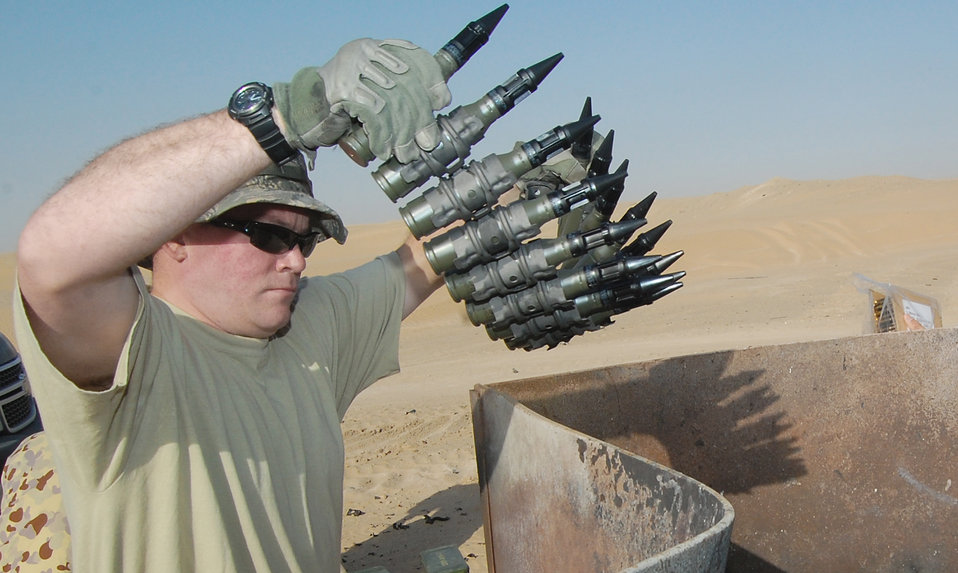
Burn notice

Tech. Sgt. Michael O'Toole loads 25mm projectiles in a burn bin for disposal Sept. 25, 2009, at an air base in Southwest Asia. EOD members, are responsible for the destruction of expired or unusable ammunition. Sergeant O?Toole is the 386th Expeditionary Civil Engineer Squadron Explosive Ordnance Disposal Flight NCO in charge.